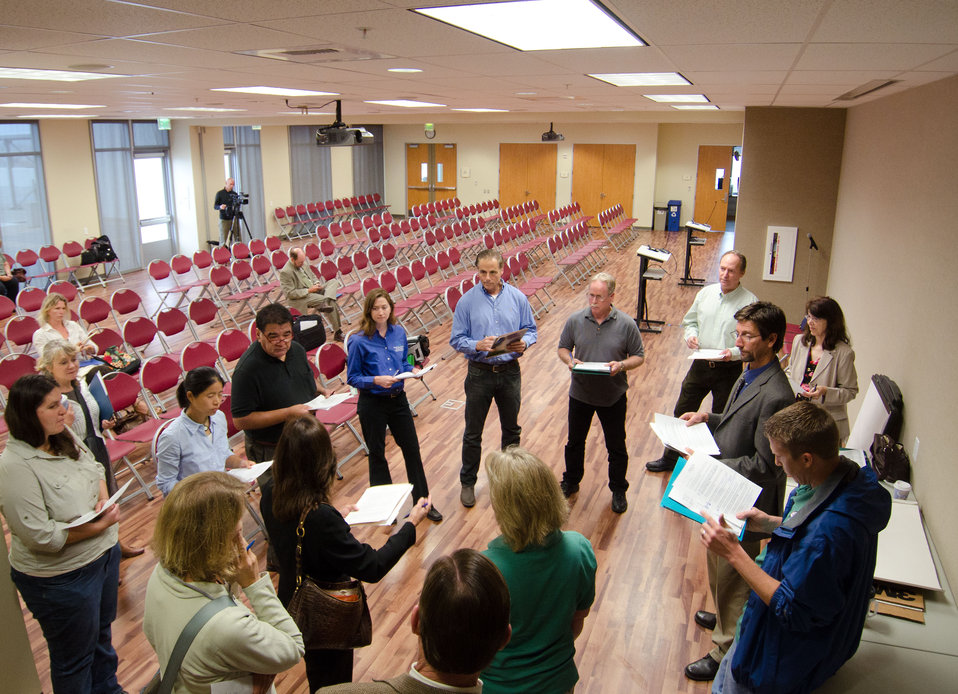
Facilitators and note takers are briefed by event directors U.S. Department of Agriculture Forest Service's Sherry Tune (black outfit) and USDA Natural Resources Conservation Service Assistant State Conservationist Daniel Mountjoy (right, grey coat/blue shirt) before the America’s Great Outdoors Initiative (AGO) Monterey Bay Pilot Area Focus Session in the City of Watsonville’s Civic Plaza in California, on Friday, June 17, 2011. Federal and state resource management agencies came together to identify partnership opportunities and determine actions for protection and enhancement of water quality and publicize voluntary stewardship iin the watersheds that drain into the Monterey Bay National Marine Sanctuary. This area includes the counties of San Mateo, Santa Cruz, Santa Clara, San Benito, Monterey, and San Luis Obispo. Key questions identified existing multi-county or multi land use partnerships; what is not being done; possible partnerships - collective resources to maximize the benefits to natural resources and communities; and additional resources that organizations can bring to maximize AGO. President Barack Obama signed the initiative on April 16, 2010 to develop a 21st Century conservation and recreation agenda.